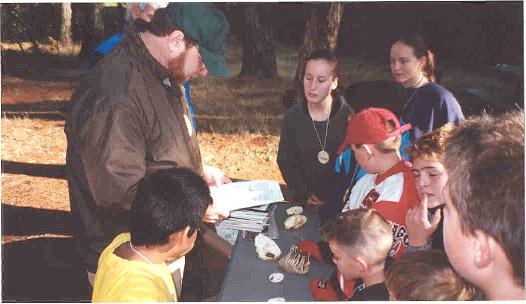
Public Lands Day fossil demonstration by Joe Ross.